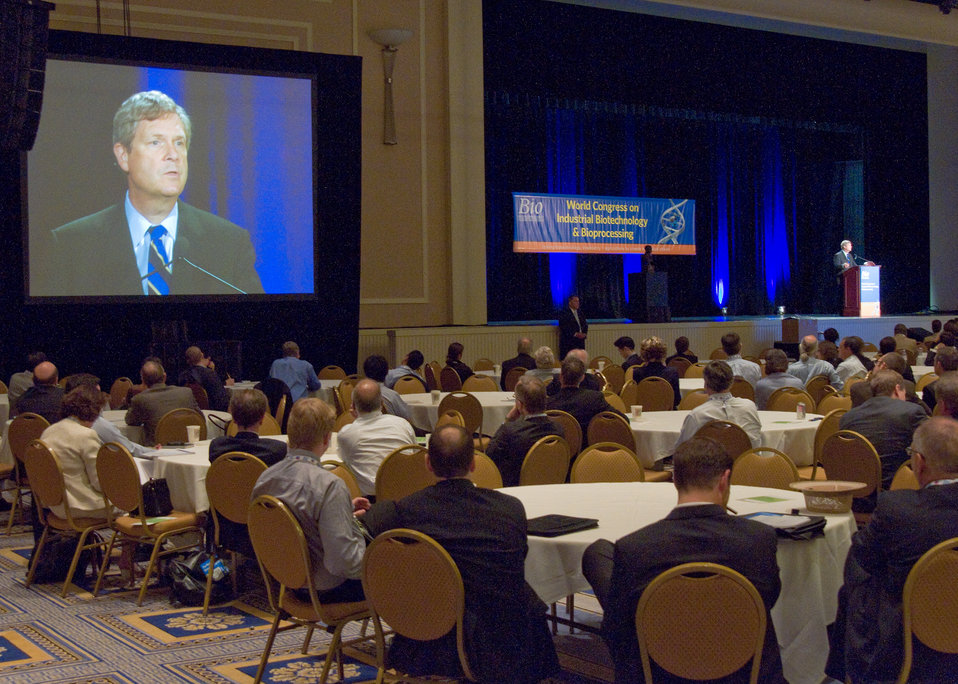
Agriculture Secretary Tom Vilsack spoke at the plenary general session, “The Marriage of Industrial and Agricultural” at the Bio – Biotechnology Industry Organization sponsored by The World Congress on Industrial Biotechnology and Bioprocessing at the National Harbor, DC on Tuesday, June 29, 2010. Secretary Vilsack discussed the partnership and cooperation of the federal government and private industry in developing biotechnology for farm, fuel and industry. USDA Photo 10di1423-029.